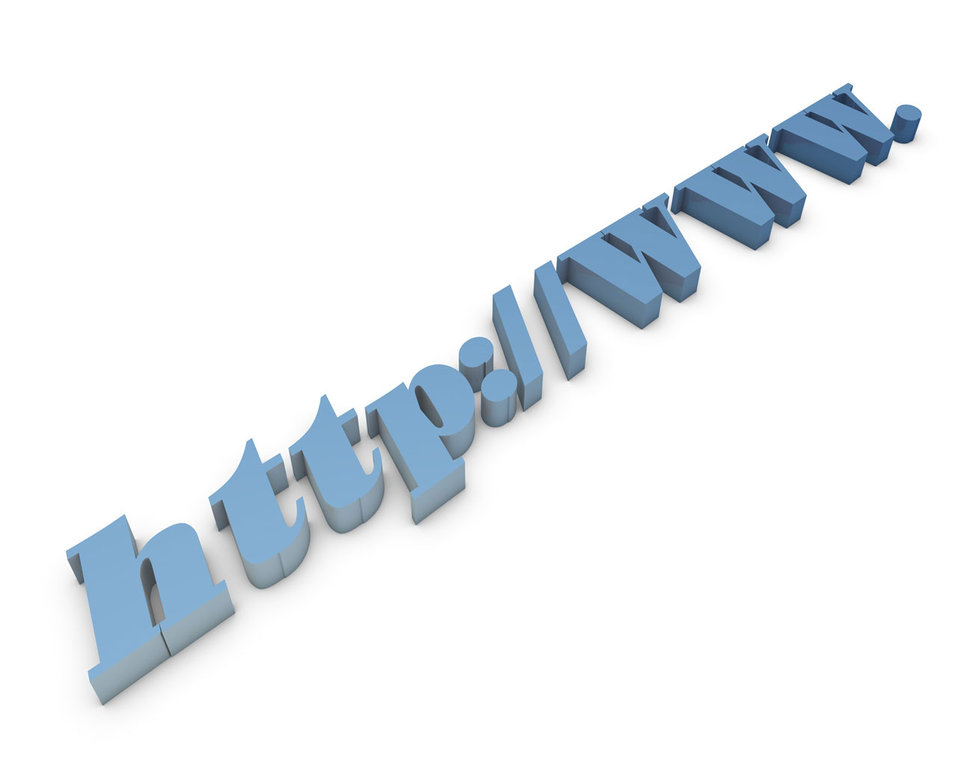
Http www blue reflection.